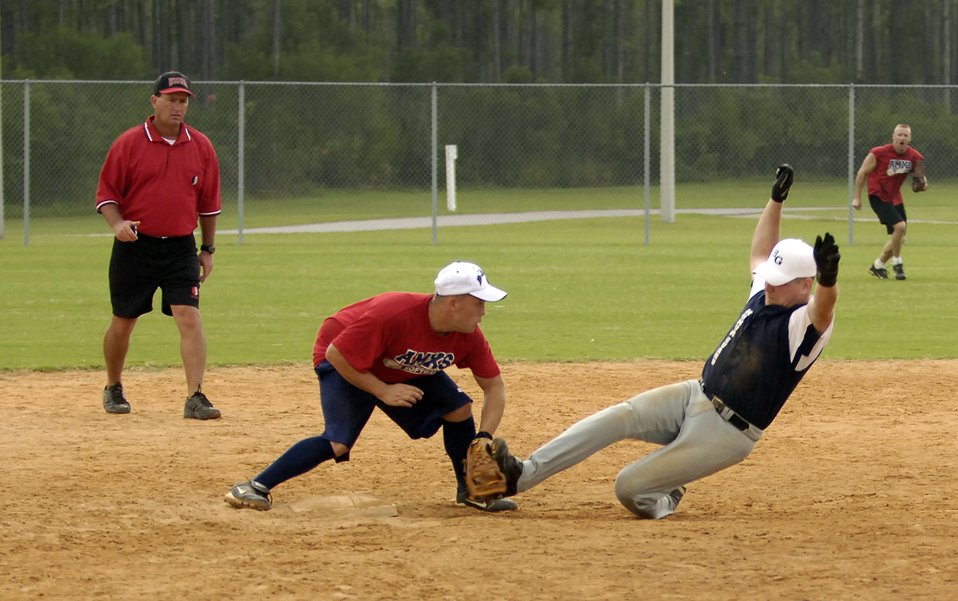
Taking on the world

PANAMA CITY BEACH, Fla. -- Jake Pullin is tagged out as he slides into second base Aug. 20 here at the 2005 World Military Championship softball tournament. The Honor Guard team lost 12-11 against the 325th Aircraft Maintenance Squadron from Tyndall Air Force Base, Fla.